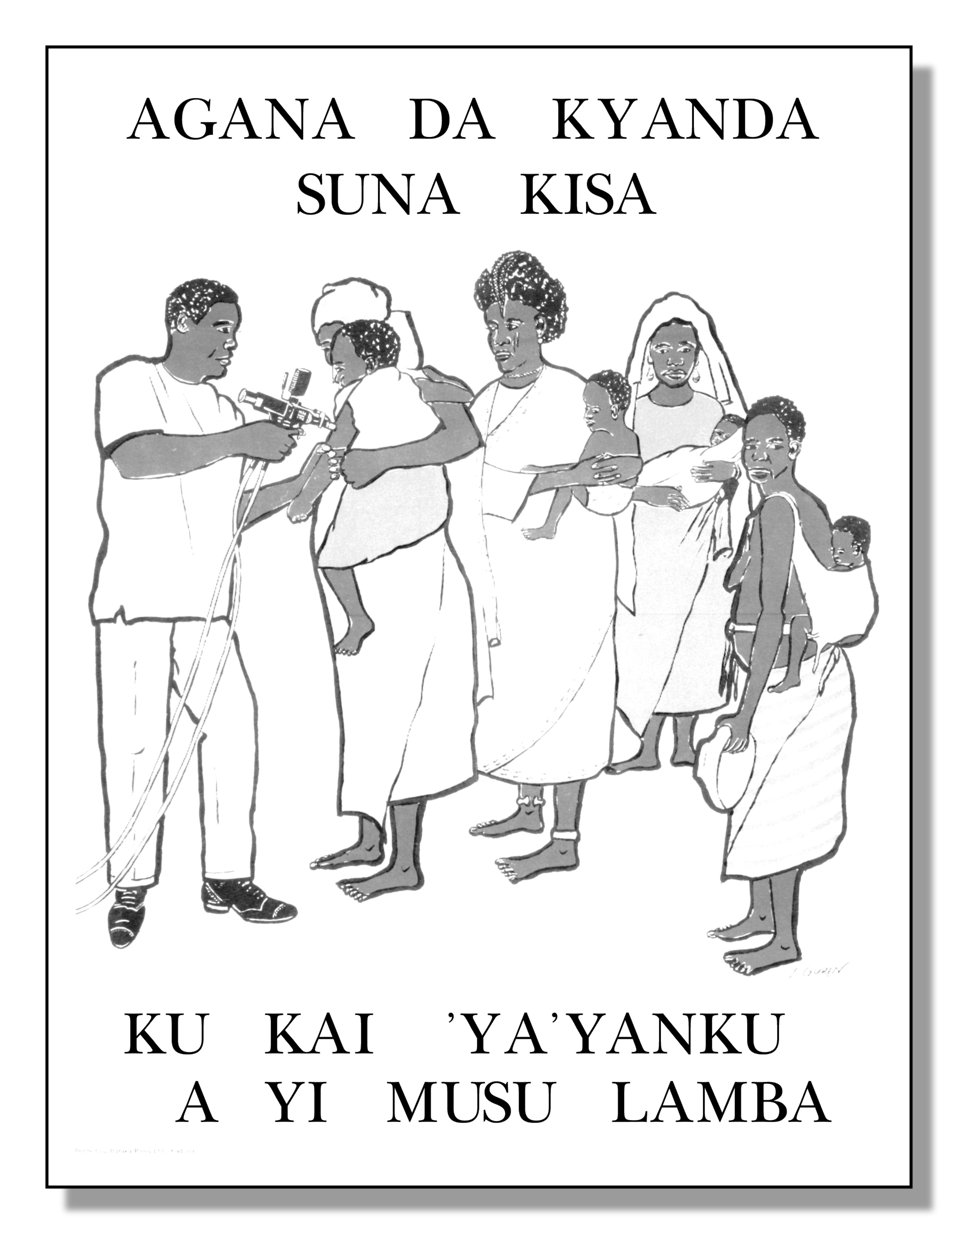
Poster created prior to 1979 promoting the importance of Smallpox/Measles vaccination.